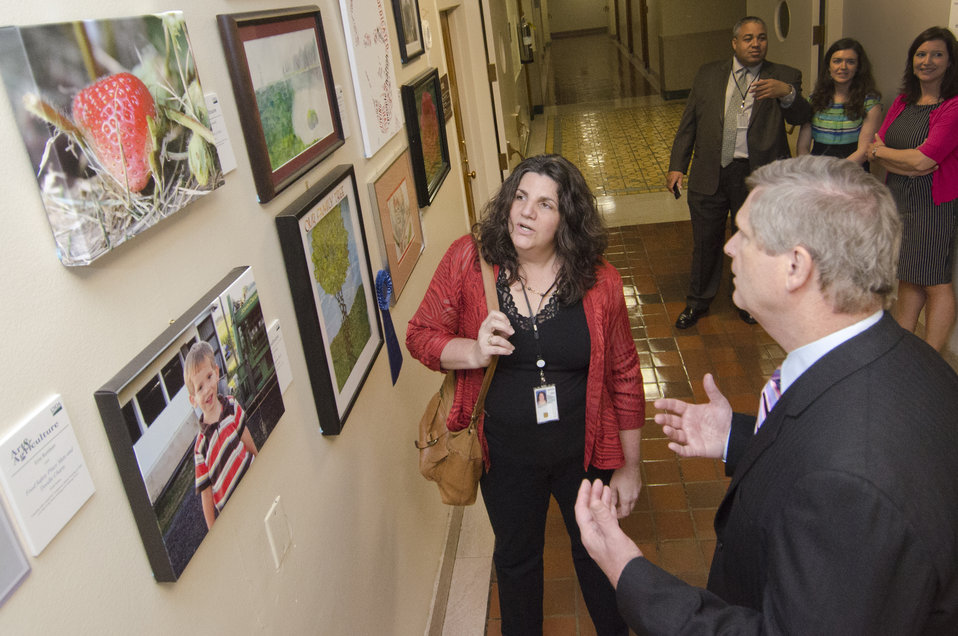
Traci Mouw discusses her artwork with Agriculture Secretary Tom Vilsack during his visit to the gallery of winning entries and some of the employee artists from the inaugural competition for Art and Agriculture, Thursday, May 31, 2012, in the South Building, Washington, D.C. U.S. Department of Agriculture (USDA) full-time and part-time employees submitted art based on ten agricultural themes. The event was part of USDA's 150th Anniversary celebration and the winning artwork is on display from May 15 through December 31, 2012. Artistic expression is a creative outlet that is vital for an individual to grow and develop in their environment.